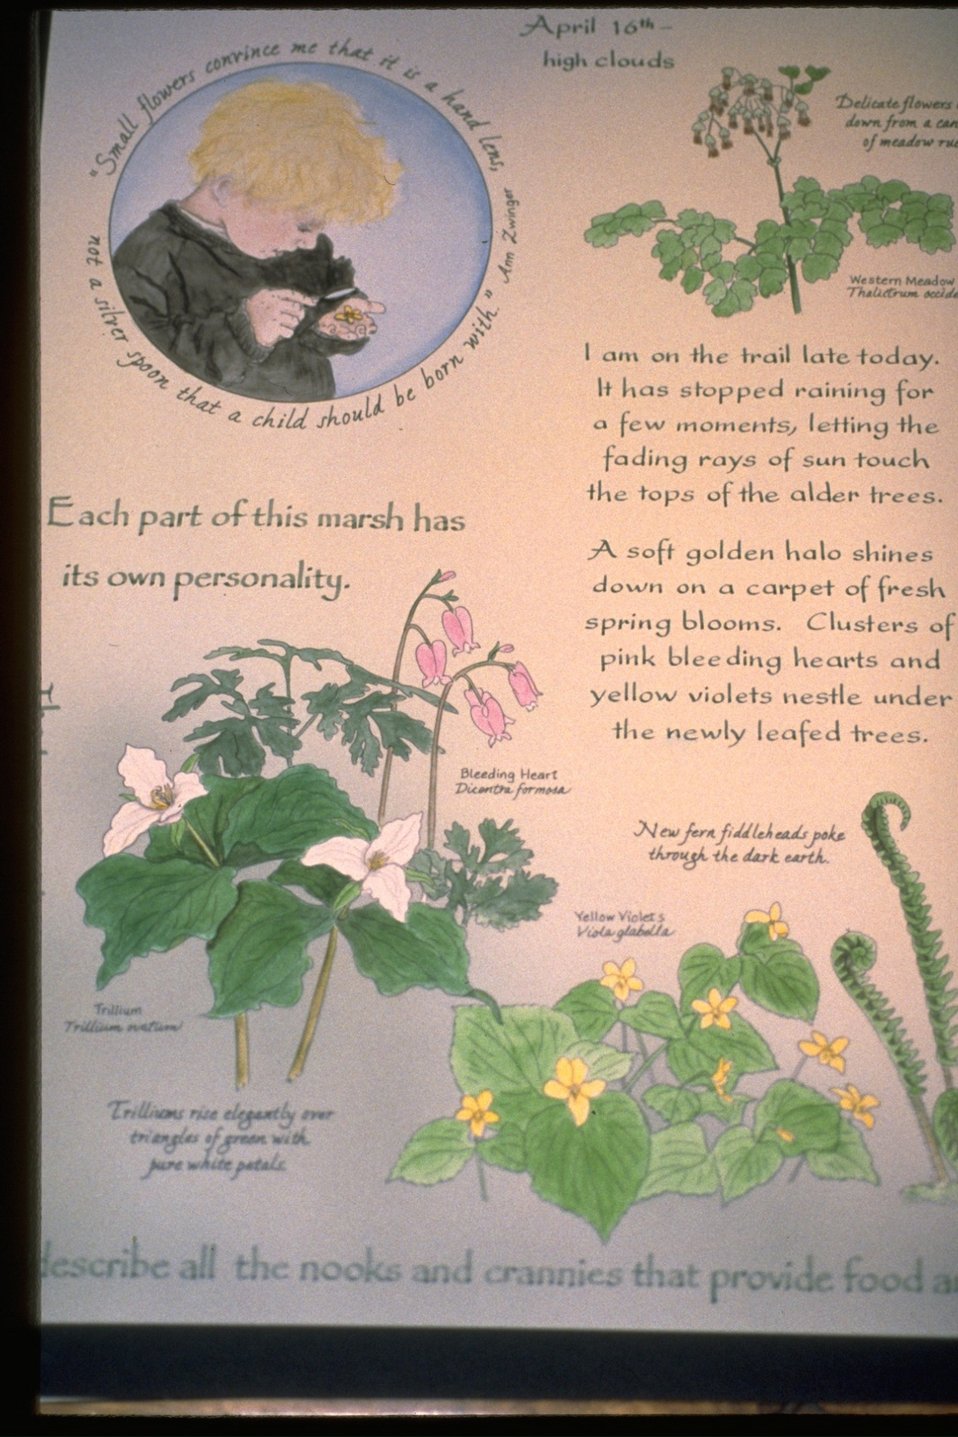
Interpretive Panels: Boardwalk Trail Journals.